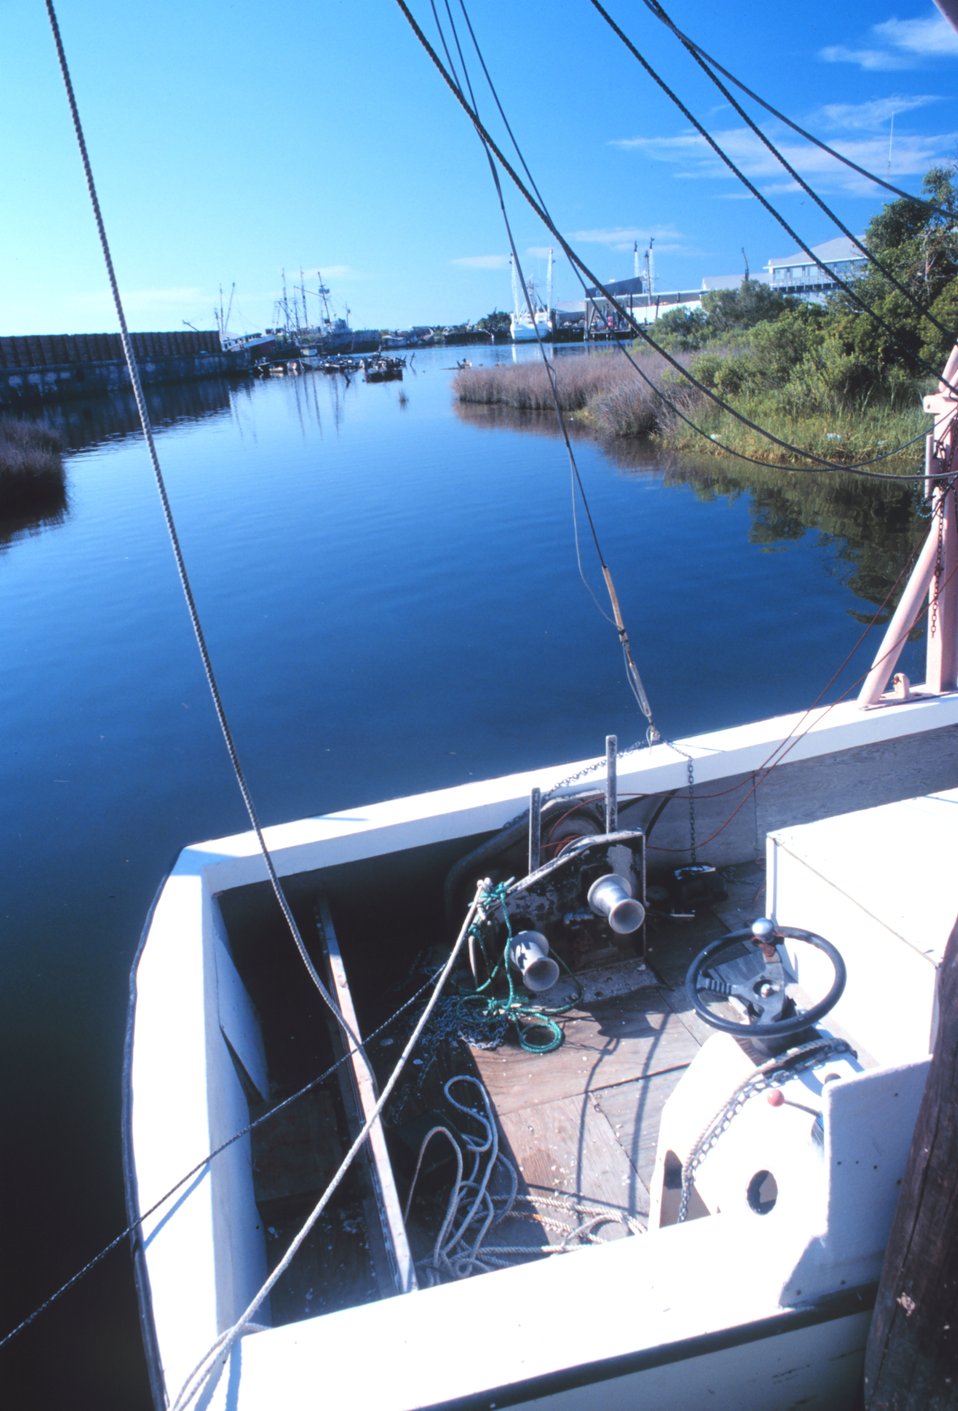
A view of the port at Wanchese over the stern of a small shrimp boat